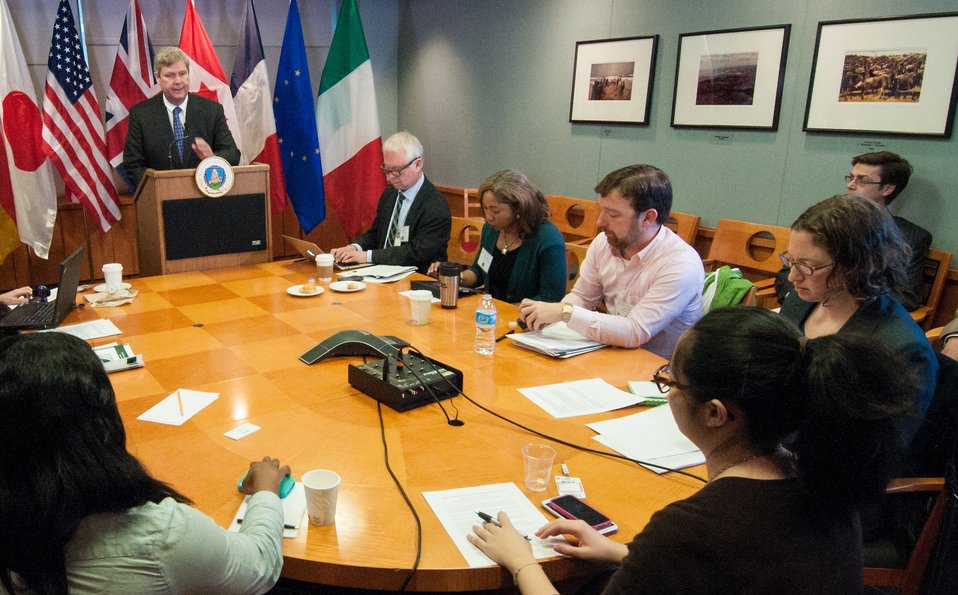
Agriculture Secretary Tom Vilsack and Agriculture Under Secretary for Research, Education, and Economics (REE) Dr. Catherine Woteki held a press conference after giving remarks at the G-8 International Conference on Open Data for Agriculture in Washington, D.C. on Monday, Apr. 29, 2013. The conference launched a new 'virtual community' Food, Agriculture, and Rural data on Data.gov-the U.S. Government's data sharing website-to catalogue America's publicly available agricultural data and increase the ability of the public to find, download, and use datasets that are generated and held by the Federal Government. The data community features a collection of more than 300 newly cataloged datasets, databases, and raw data sources related to food, agriculture, and rural issues from agencies across the U.S. Government. In addition to the data catalog, the virtual community shares a number of applications, maps and tools designed to help farmers, scientists and policymakers improve global food security and nutrition.